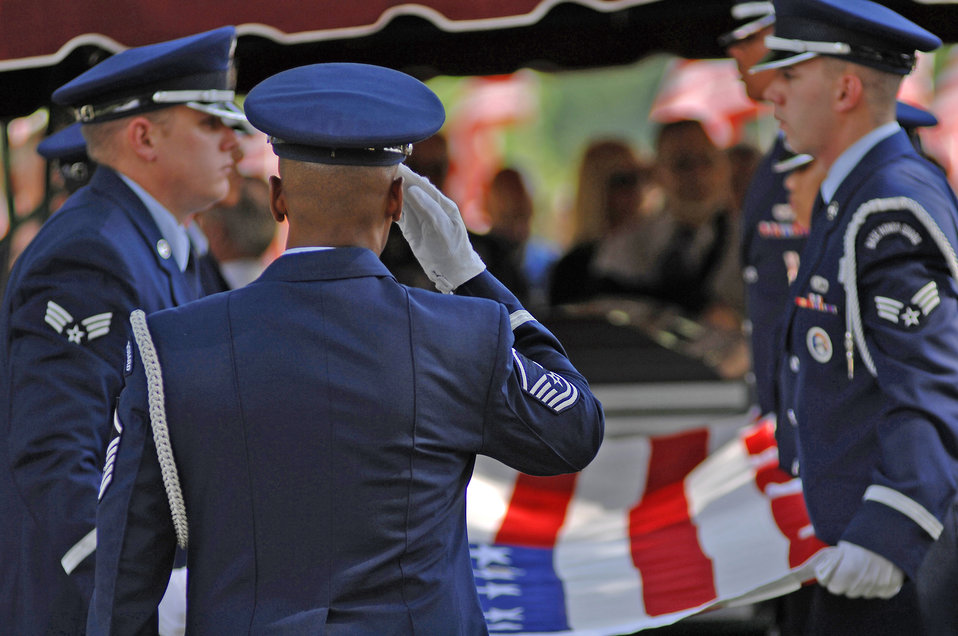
War hero brought home, laid to rest after 30 years MIA

Master Sgt. Gregory Giles renders a salute as the rest of the honor guard folds the American flag to be presented to the father of Chief Master Sgt. Quincy Adam at Chapel Hill Memorial Cemetery July 27. Chief Adam is a Vietnam War veteran who was missing in action for more than 40 years. Chief Adam's remains were discovered in Southeast Asia, and he was finally brought home to be laid to rest, giving his family closure in their lives. Sergeant Giles is the Whiteman Air Force Base Honor Guard senior leader.